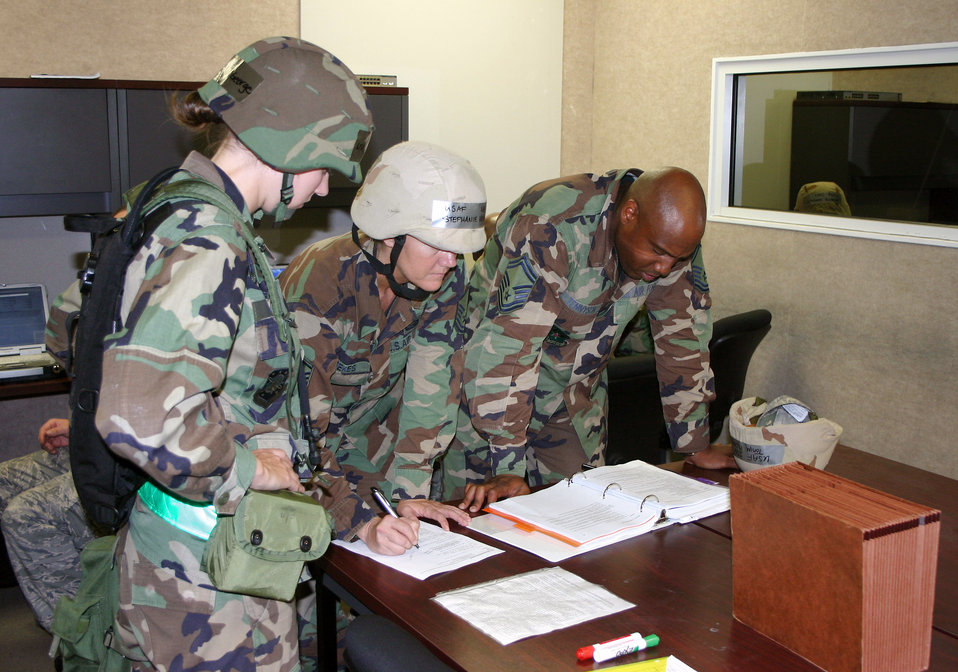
Airmen hone contingency skills at Silver Flag

2nd Lt. Melissa George, Master Sgt. Stephanie Kerekes and Senior Master Sgt. Nate Tennyson review casualty procedures during a Silver Flag exercise Nov. 2 at Tyndall Air Force Base, Fla.